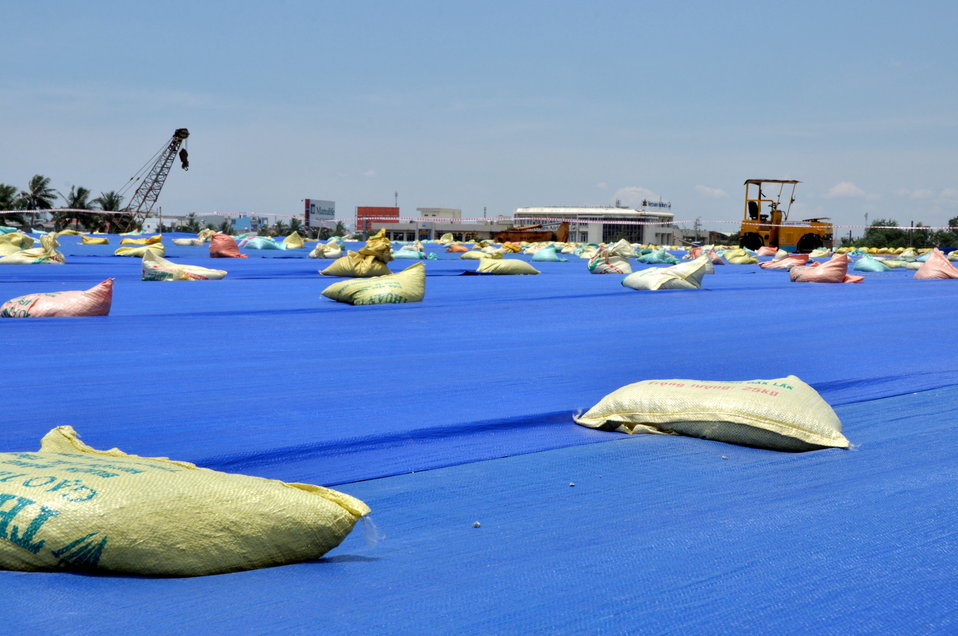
USAID Dioxin Contamination Project Progress: Containment Structure

Progress at the Environmental Remediation of Dioxin Contamination Project at Danang Airport

July 16, 2013